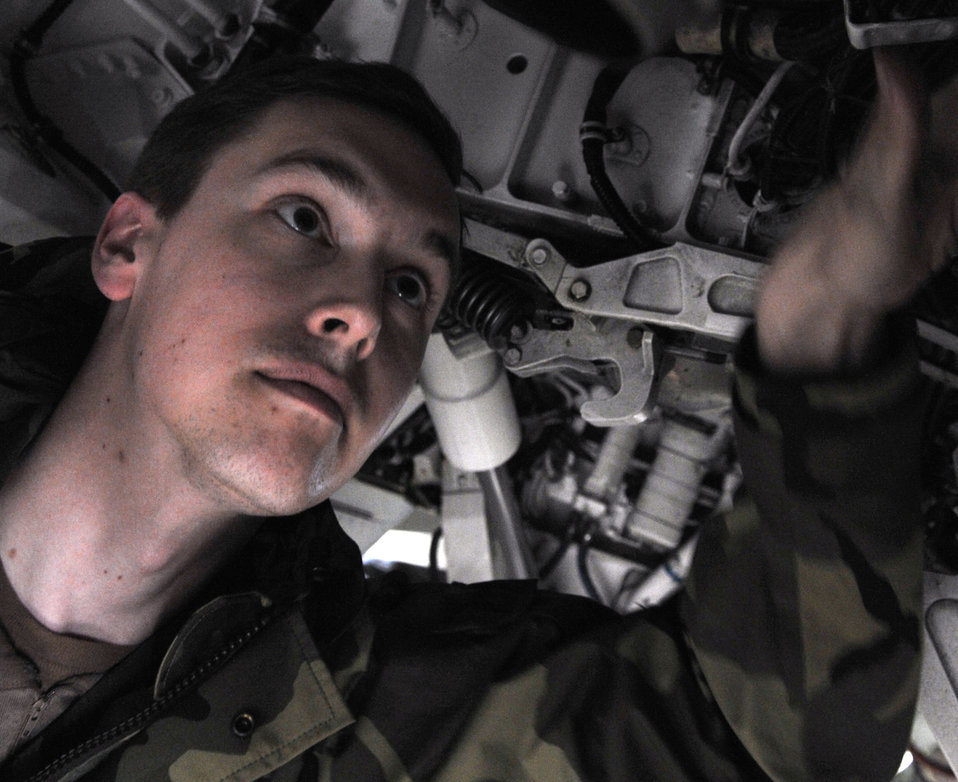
Making it happen: RF-A Maintainers

Senior Airman Justin Bauer inspects an F-16 Fighting Falcon April 17 during Red Flag-Alaska at Eielson Air Force Base, Alaska. Red Flag-Alaska is a Pacific Air Forces-directed field training exercise for U.S. and coalition forces who fly under simulated air-combat conditions. Airman Bauer is an aircraft electrician from the Iowa Air National Guard's 132nd Fighter Wing from Des Moines.